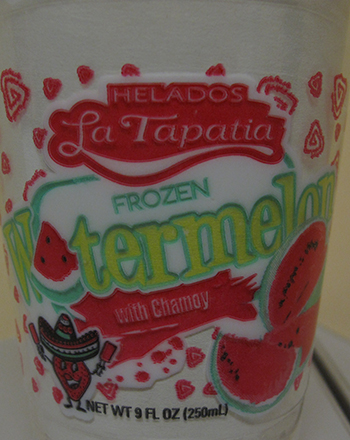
RECALLED – Ice cream products

March 19, 2014 – Product Recall – Helados La Tapatia, Inc. Recalls Products Because of Possible Health Risk.